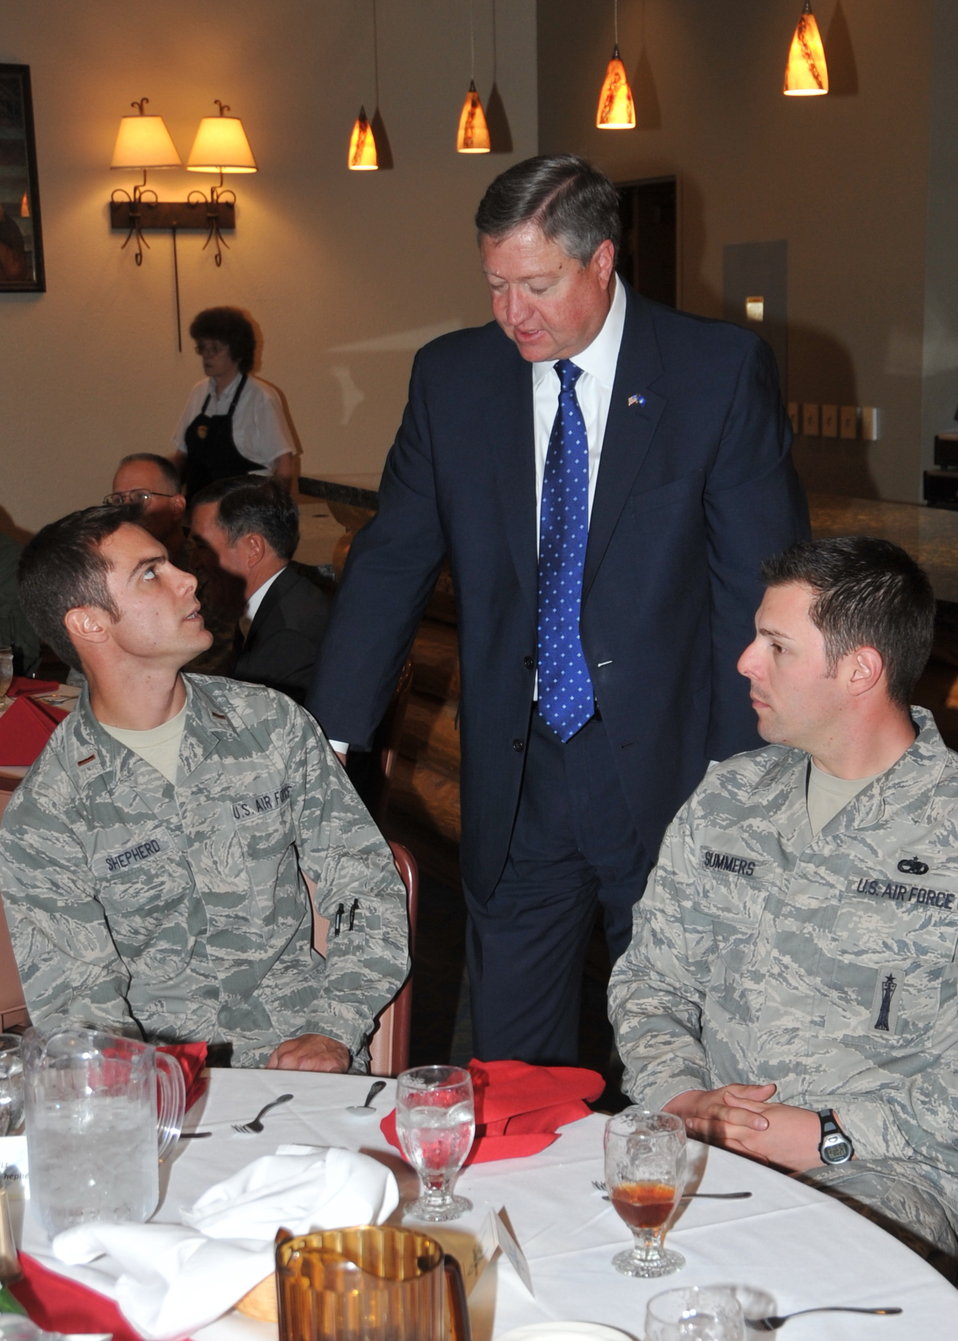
SECAF visits Kirtland Air Force Base, N.M.

Secretary of the Air Force Michael Donley chats with Airmen at lunch Oct. 14, 2010, during his visit to Kirtland Air Force Base, N.M.